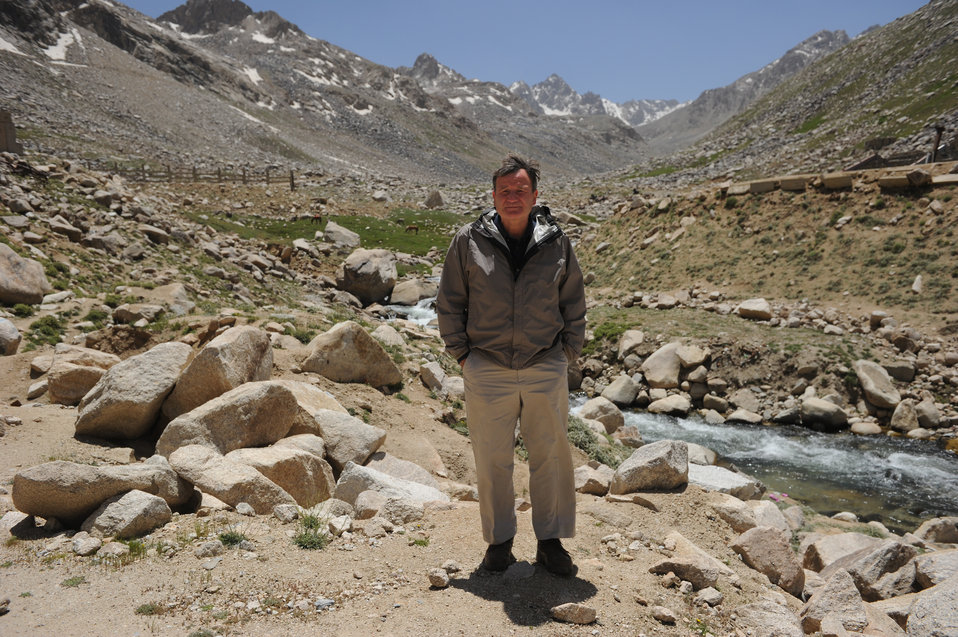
U.S. Ambassador Karl W. Eikenberry near the North entrance of the Salang Tunnel on the border of Parwan and Baghlan Provinces, Afghanistan, on Wednesday, June 15, 2011. (S.K.Vemmer/Department of State)